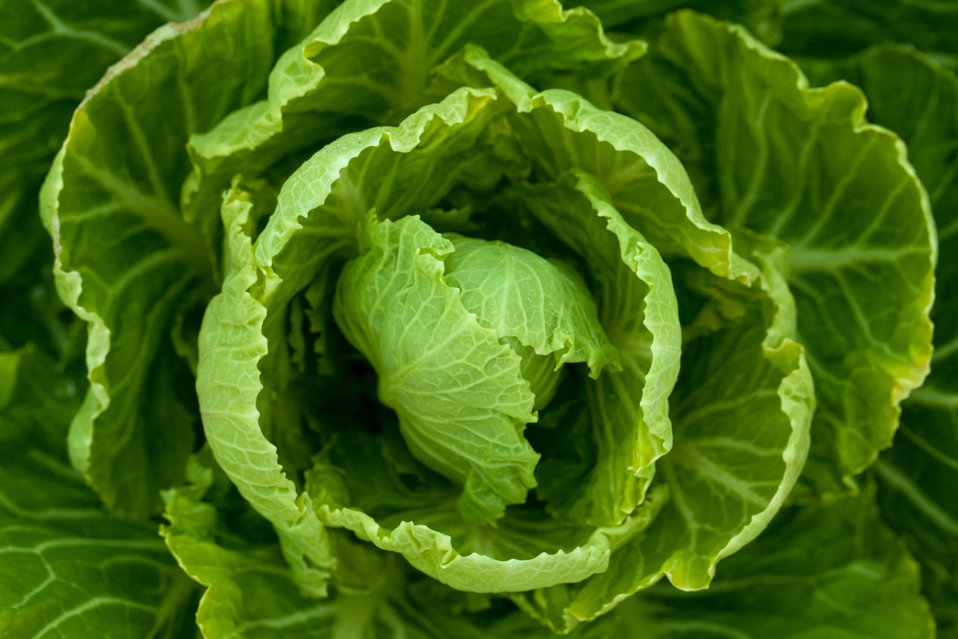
Growing cabbage

Growing green cabbage.